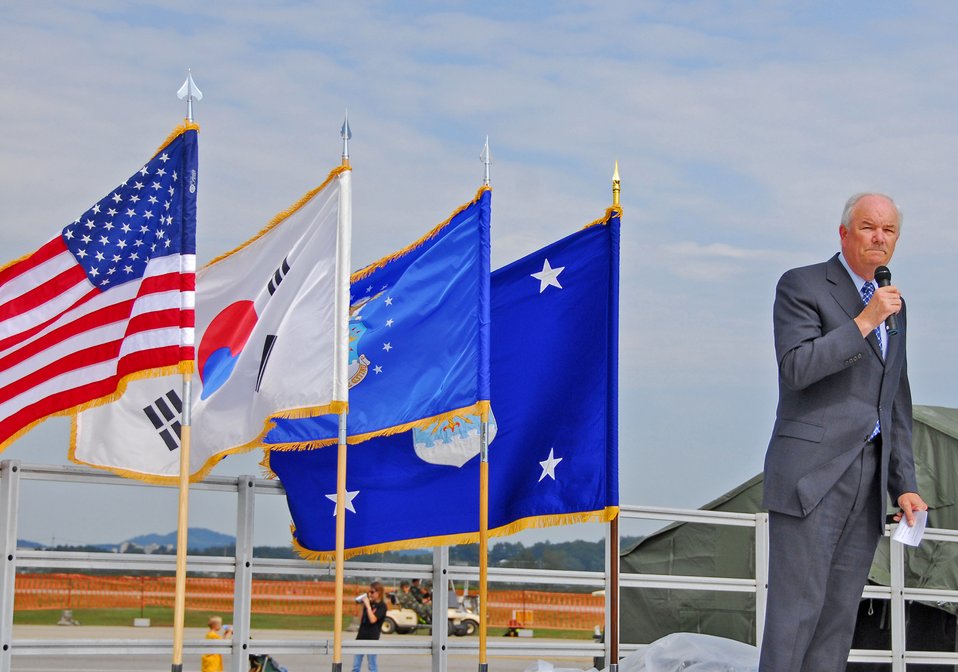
Secretary Wynne: Airmen in Korea have unique experience

Secretary of the Air Force Michael W. Wynne addresses the crowd Oct. 6 during the opening ceremonies at Osan Air Base, South Korea, for Air Power Day, an annual air power demonstration.